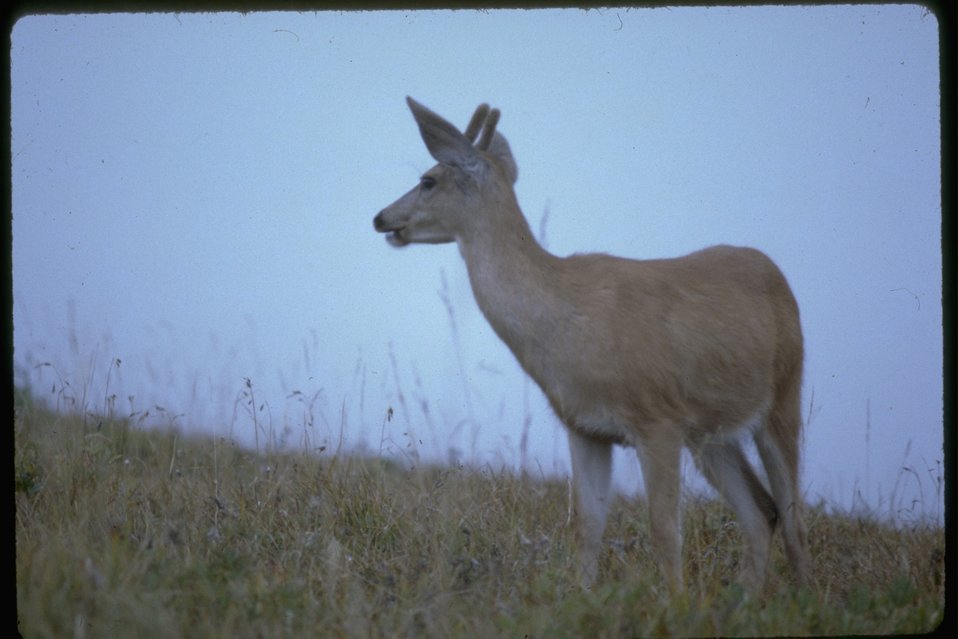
A Black Deer standing in the rangeland.